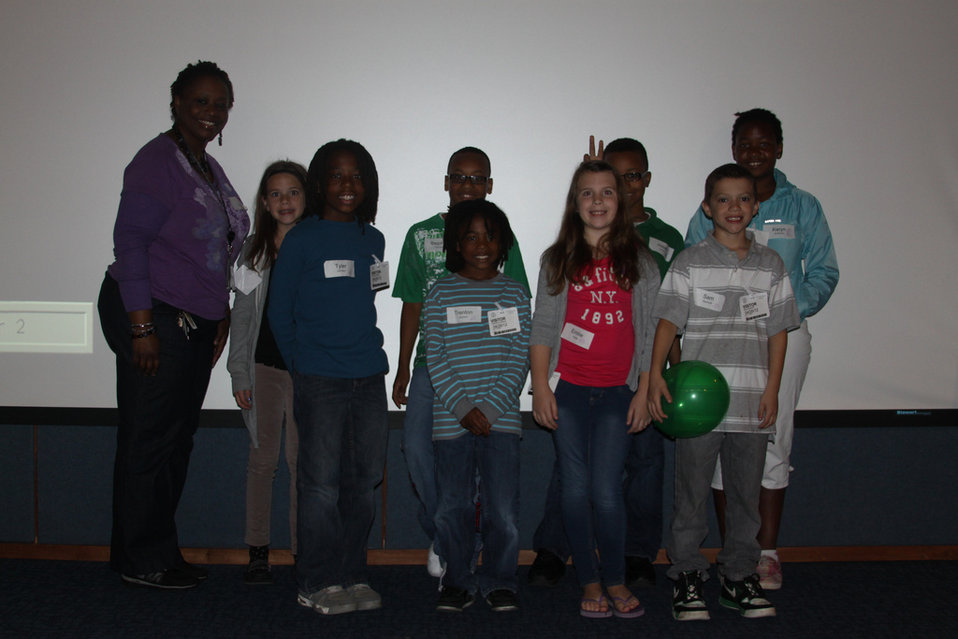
Patrice's Group